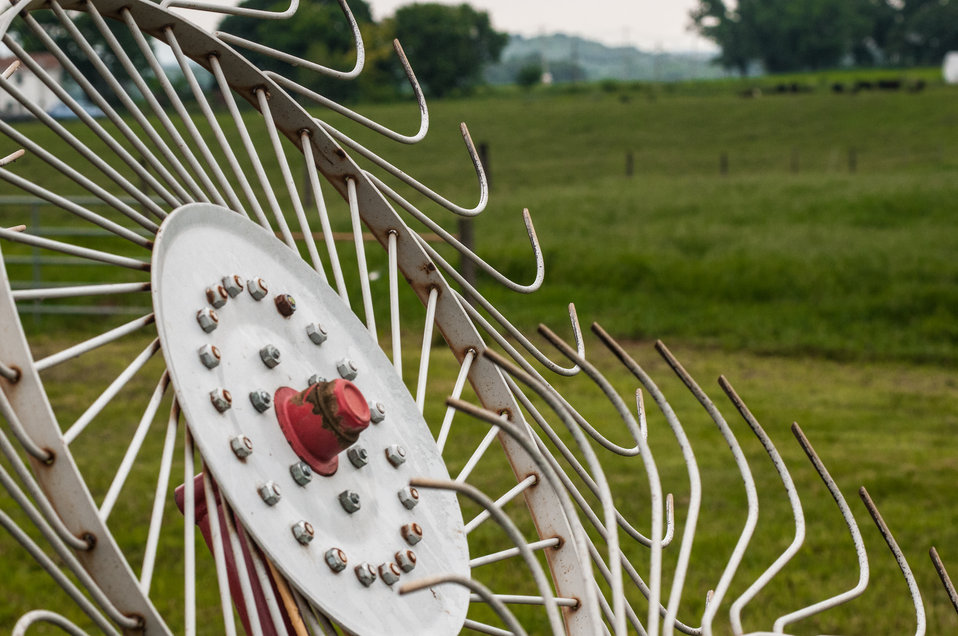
Farm equipment at Nick’s Organic Farm, owned by Nick Maravell in Adamstown, MD on Friday, July 12, 2013. The farm produces Black Angus beef, chicken, turkey, eggs, hay, soybeans, corn, alfalfa, orchard grass, rye; and other crops. The cattle are 100% grass-fed receiving certified organic pasture, certified organic hay (in winter), water and mineral salts mixed with sea kelp. The cattle are not fed hormones, antibiotics or animal products. Poultry feed from grain is ground from organic grain. The poultry also graze on organic pastures. The farm has conducted on-farm research with federal, state and non-profit agencies to refine organic practices. An organization such as the U.S. Department of Agriculture (USDA) Agricultural Research Service (ARS) center in Beltsville has been able to conduct research to improve organic crops and to breed and manage the cattle so that they have. George Kloph is the farm assistant at this site.